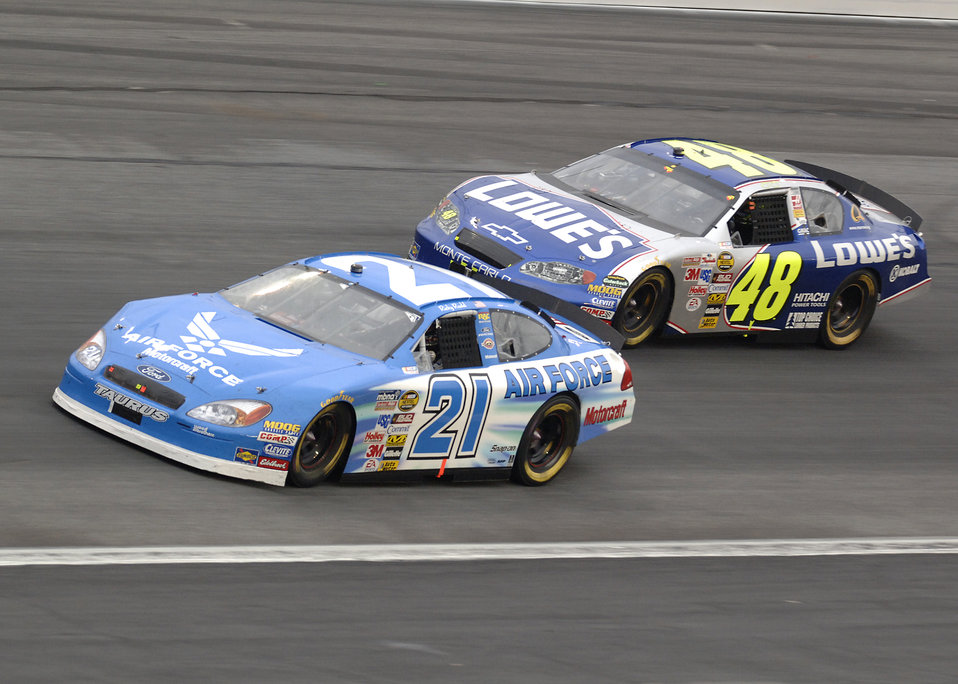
Race into the blue

CONCORD, N.C. -- Ricky Rudd, driving the Air Force Wood Brothers Racing No. 21, battles with eventual Coca-Cola 600 winner Jimmie Johnson at the speedway here May 29. The race ended early for Rudd when he blew an engine.